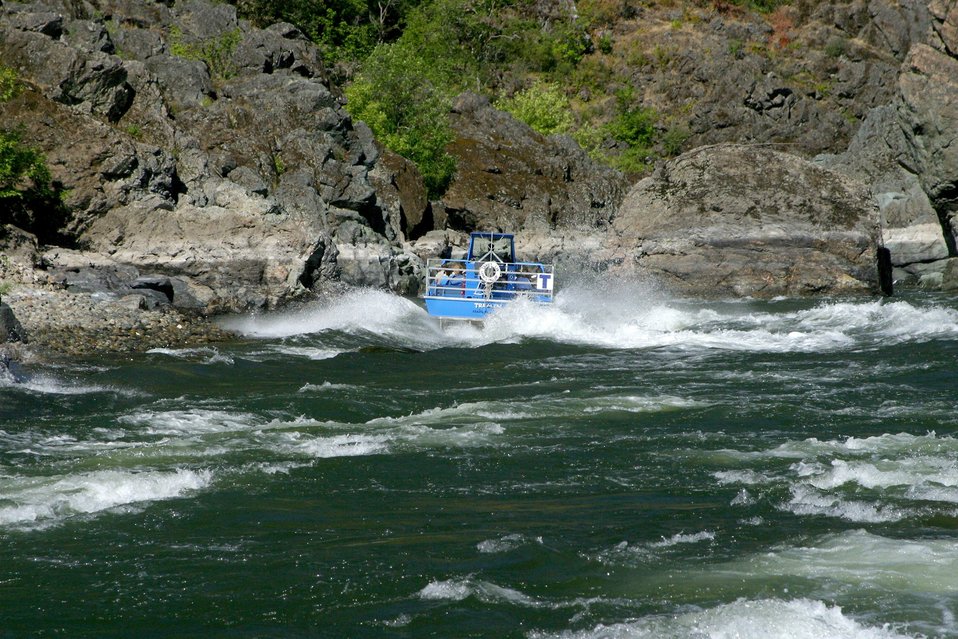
Jet baot entering Hellgate Canyon.